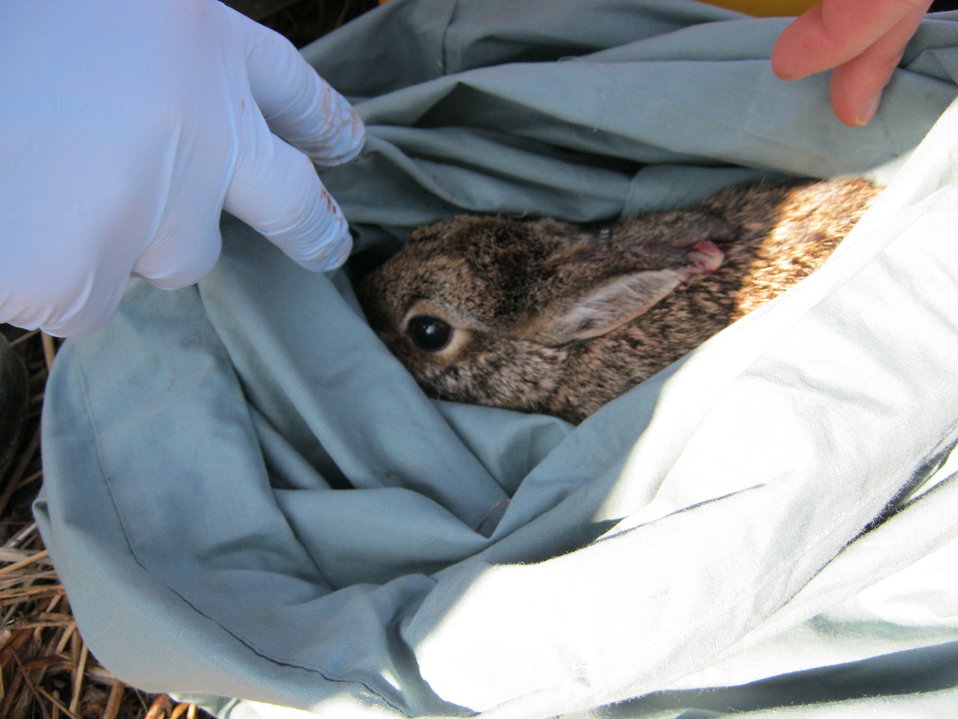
Finding New England cottontails

A cottontail that was trapped and is being quickly processed before being released back into its home.